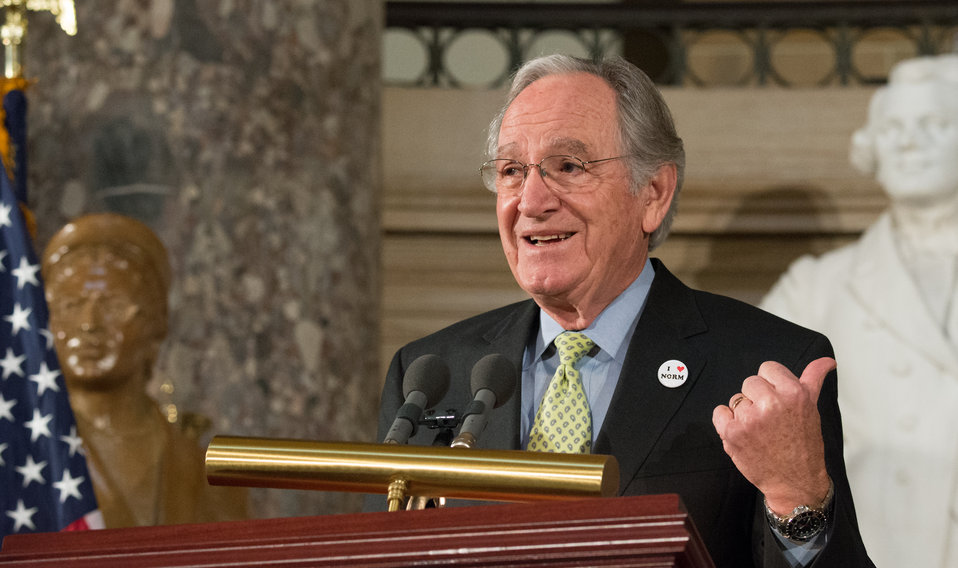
U.S. Senator Tom Harkin speaks at the dedication of the Dr. Norman Borlaug statue in the National Statuary Hall at the U. S. Capitol in Washington, D.C. on Tuesday, Mar. 25, 2014. Today commemorates 100 years since Dr. Borlaug’s birth. Through his scientific and humanitarian achievements, Nobel Laureate Dr. Norman E. Borlaug (1914-2009) has been credited with saving millions of people from starvation in developing countries. His collaborative work with scientists in Mexico on a high-yielding, disease resistant dwarf wheat sparked the Green Revolution of the 1960s. The National Statuary Hall Collection in the U.S. Capitol is composed of statues donated by individual states to honor persons notable in their history.